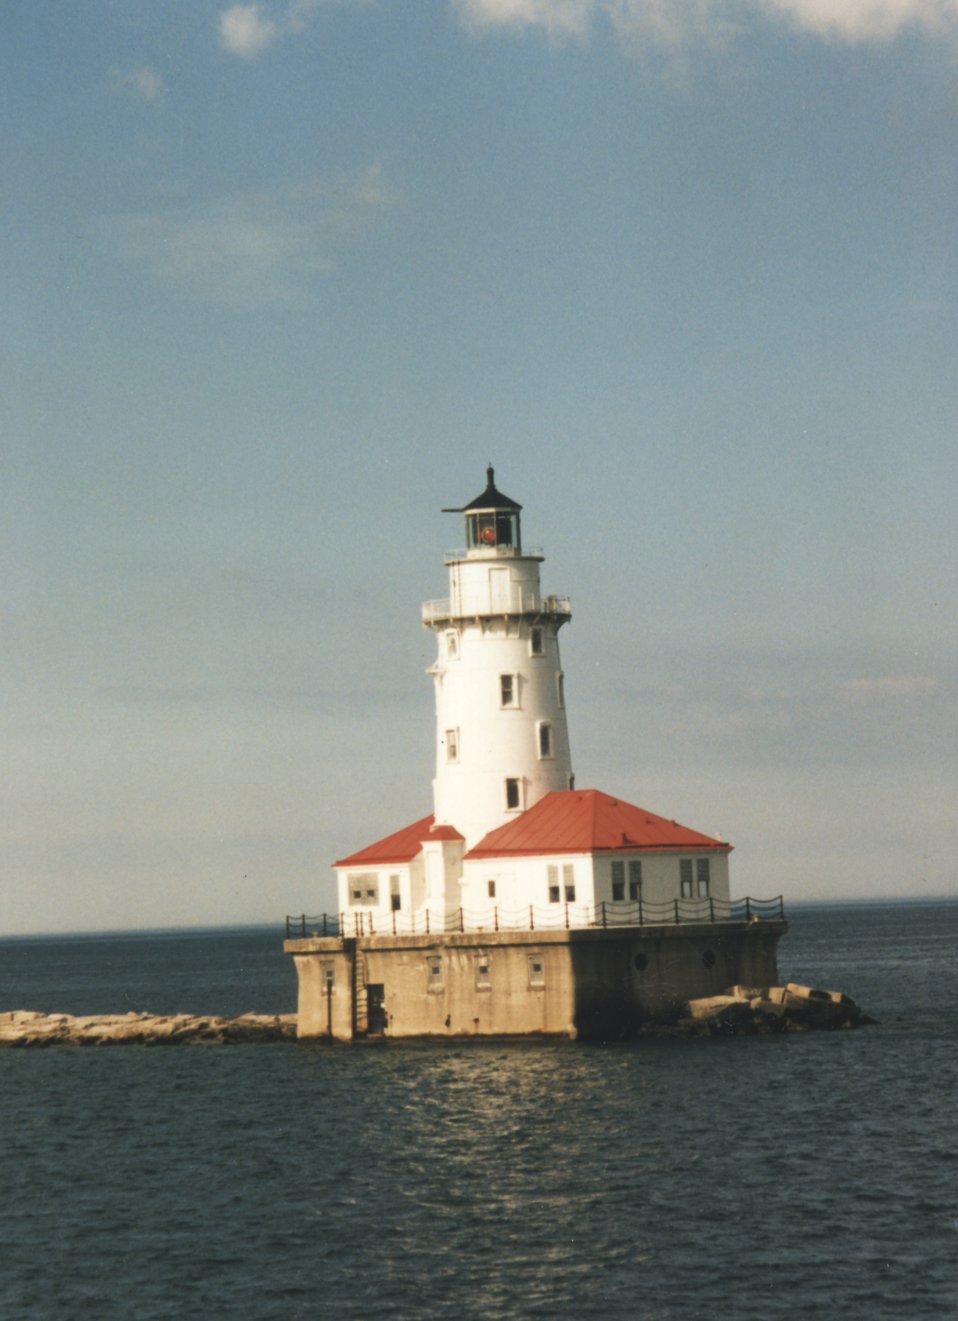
Chicago Breakwater Lighthouse on Lake Michigan